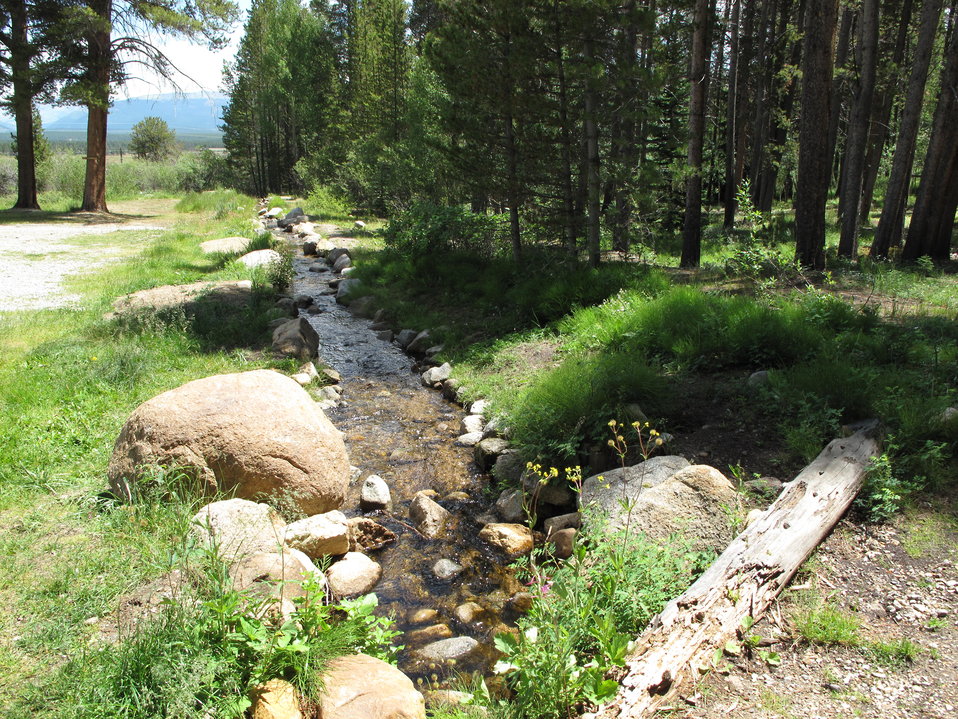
Leadville National Fish Hatchery

This creek was once a raceway, but because it is located at ground level and was very old the staff at the hatchery decided to convert it into a creek.